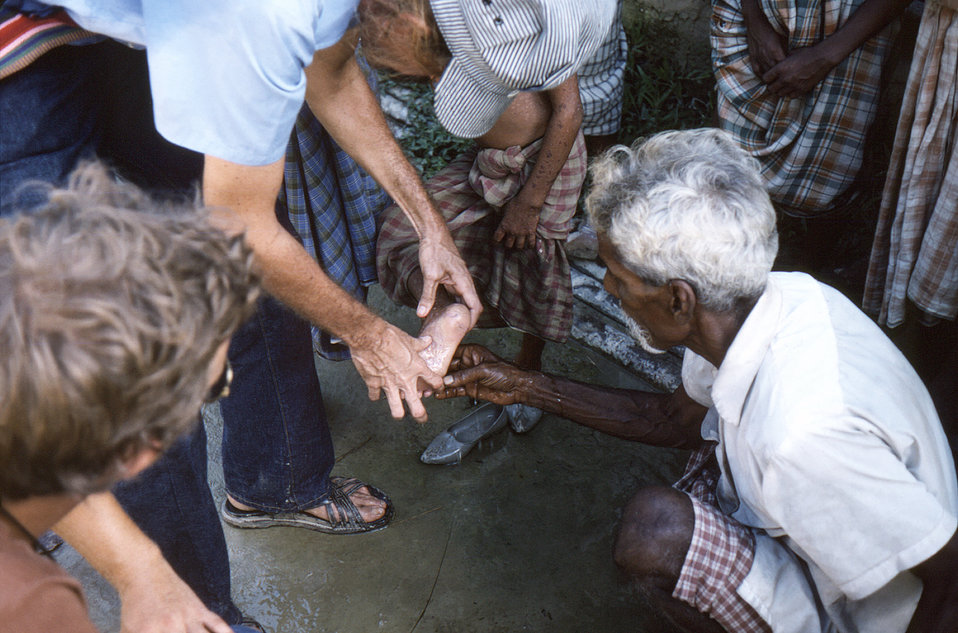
Wearing his striped cap, this image depicted Dr. Stephen Jones as he was examining a young smallpox patient for the presence of any smallpox scabs. Patients are found to still be infectious until they no longer exhibit any remaining scabs. This photograph was captured in the north-eastern Bangladesh outbreak District of Sylhet,